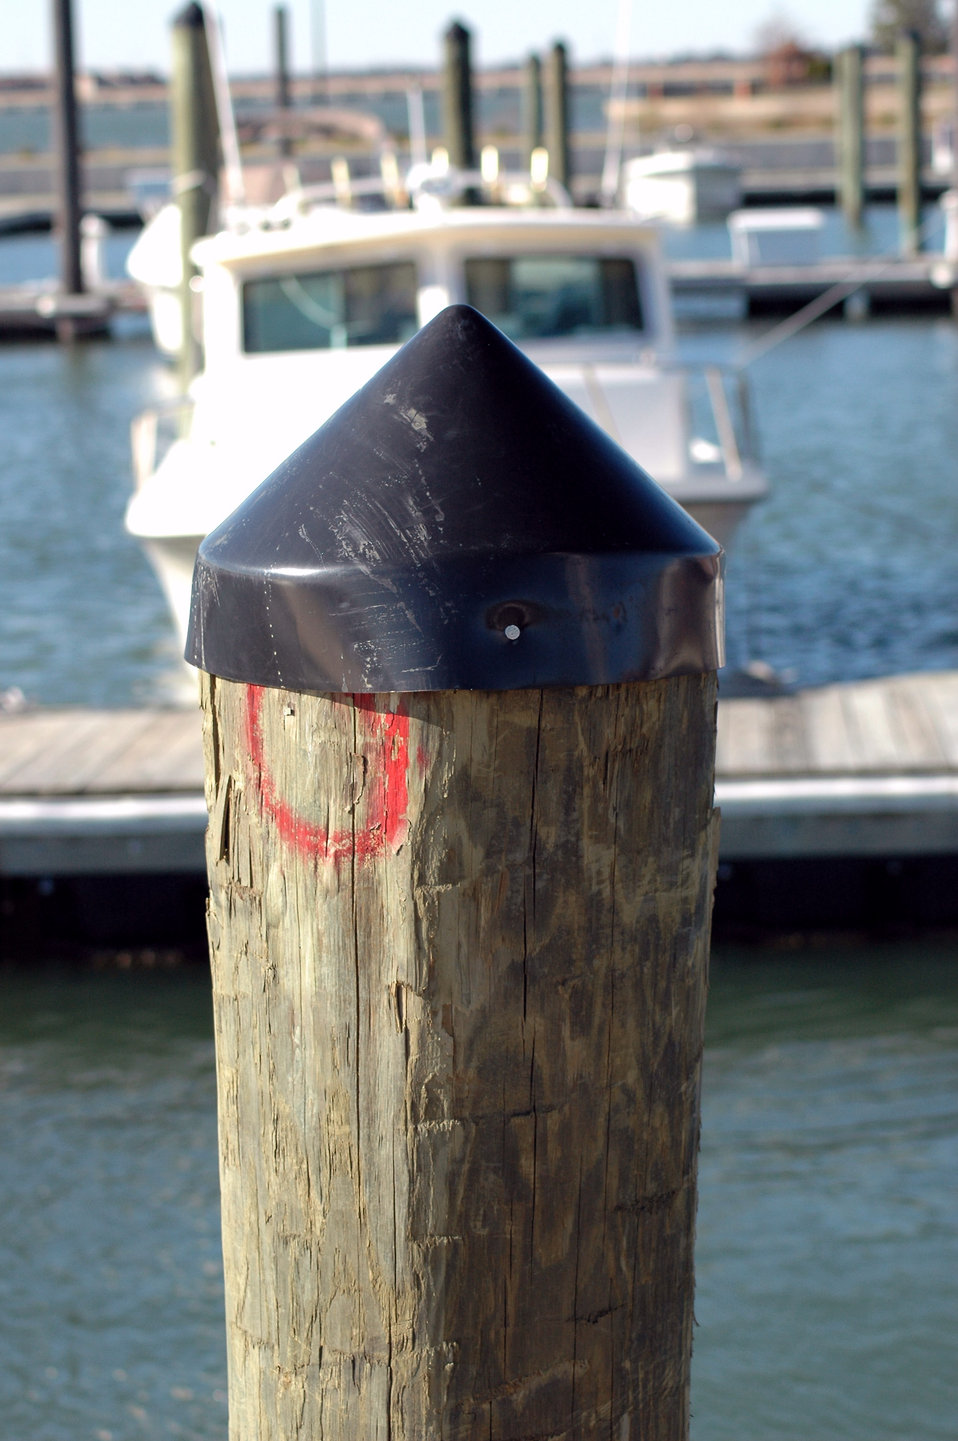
Langley officials fight to keep F-22s from being damaged

Cone devices are placed on peer poles where birds would perch, loof or roost near Langley Air Force Base, Va. They are placed by the Bird and Wildlife Aircraft Strike Hazard team to lower bird activity. This in turn lowers the chances of bird strikes with aircraft.